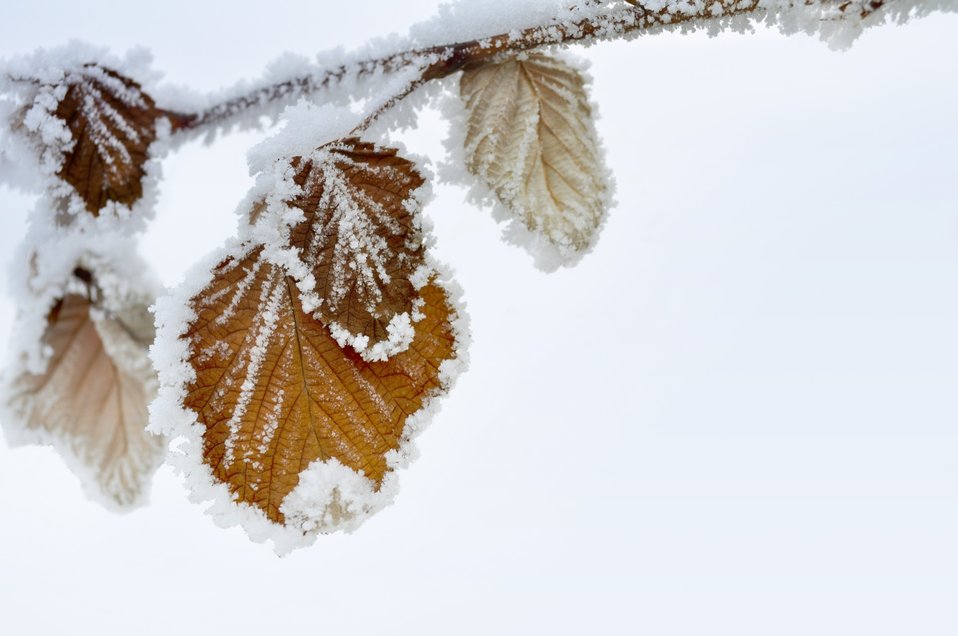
Dry leaves in snow

Raspberry leaves in snow.